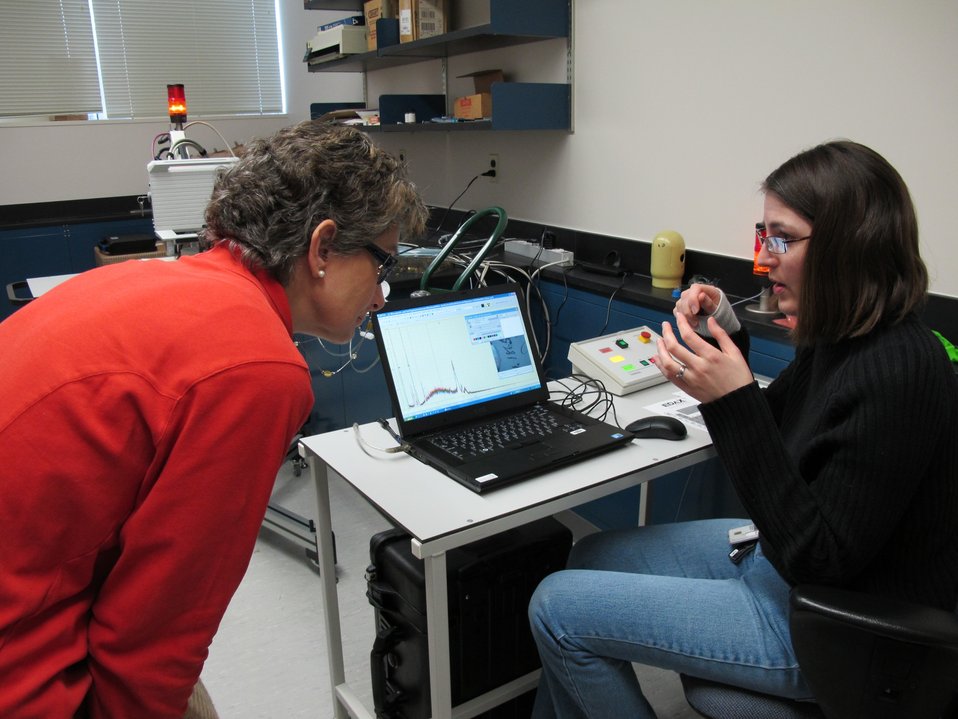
Kathy Ludwig and Jennifer Herrmann conduct XRF analysis of a forged date on a Lincoln Pardon; Location: Archives 2 - Conservation Testing Lab, College Park, MD